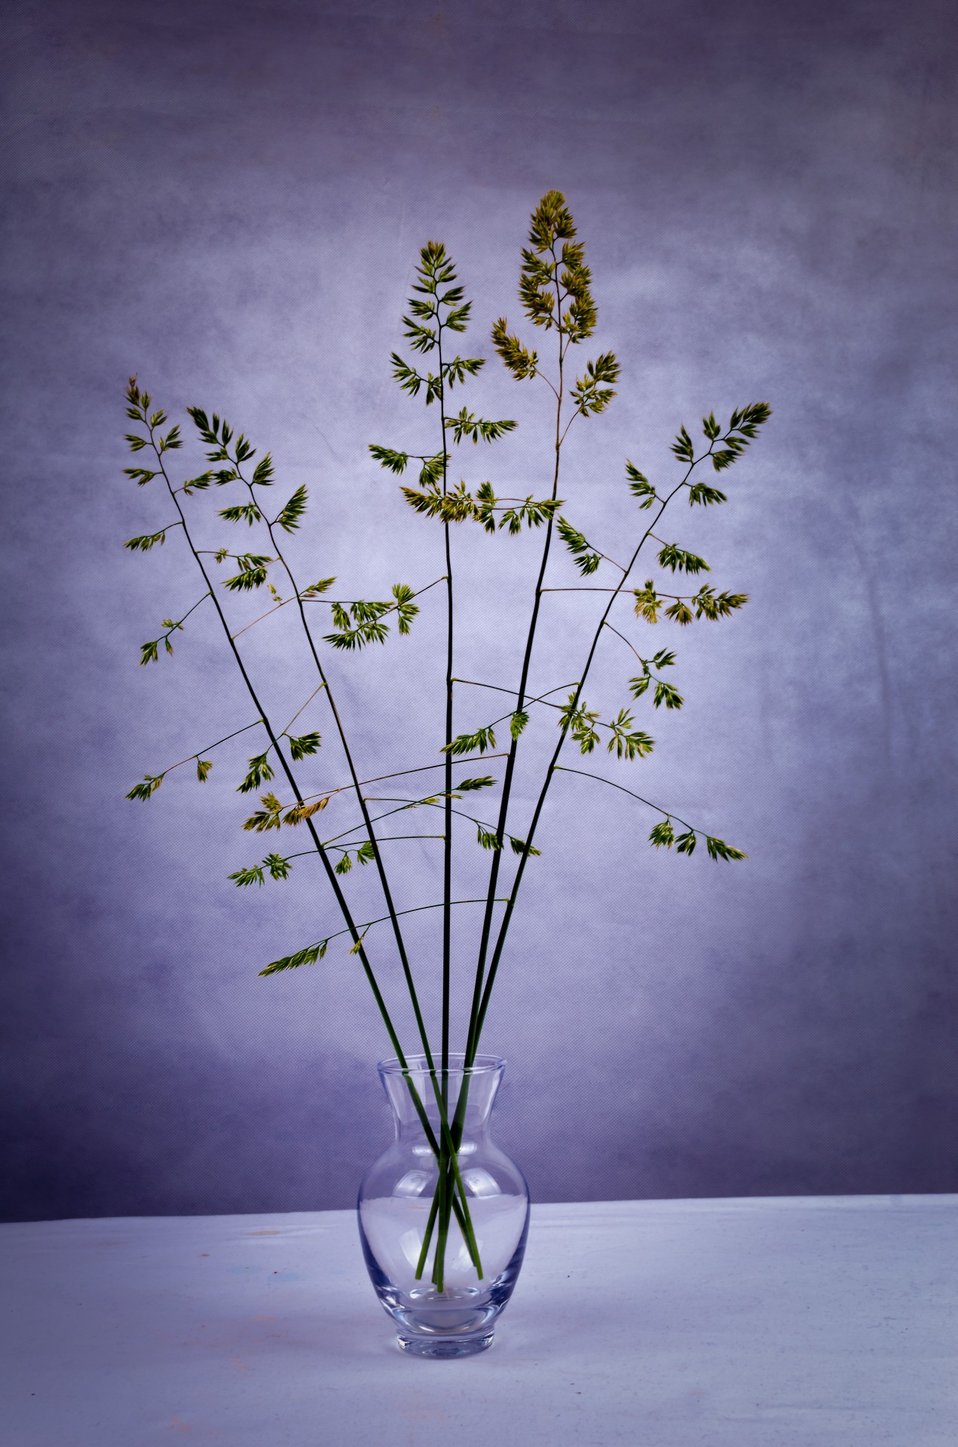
Green plant in the vase.